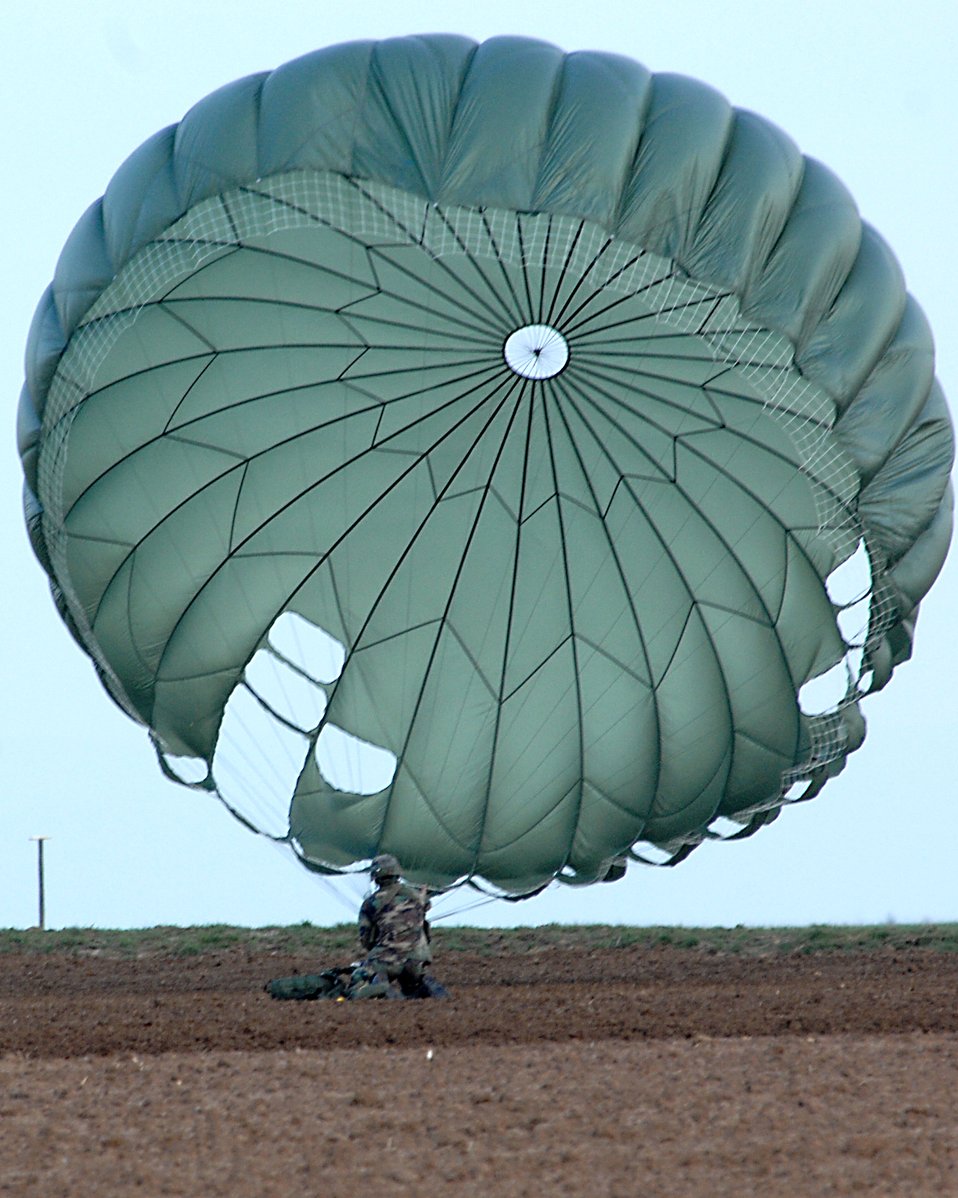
Airborne over Deutschland

An Airman from the 786th Security Forces, Sembach Annex, Germany reaches the ground March 8 and gathers his parachute after parachuting off the back ramp of a C-130 Hercules during a tactical training exercise over southwestern Germany.